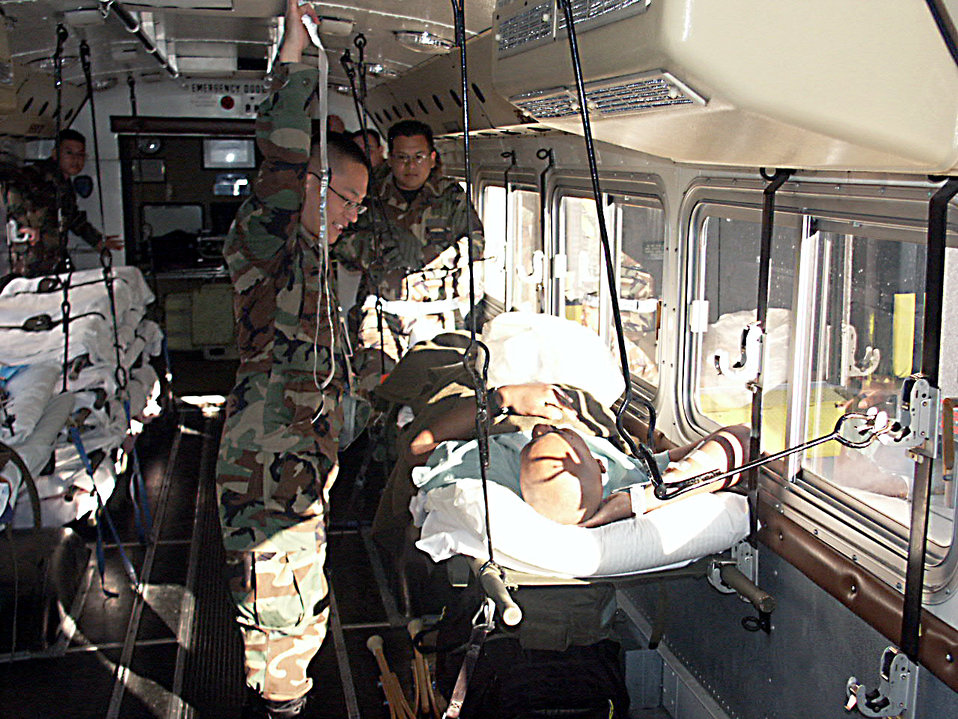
Patient care

LACKLAND AIR FORCE BASE, Texas -- Senior Airman William K. Poon (left) checks on a servicemember injured in Operation Iraqi Freedom. The patient was one of 47 brought here April 9.